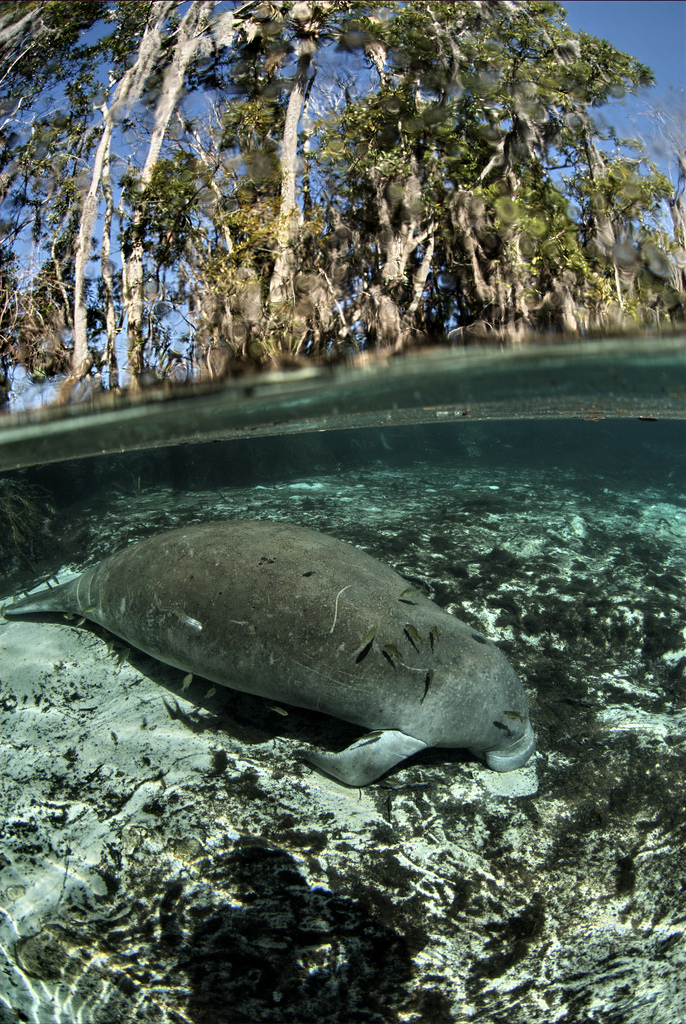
Endangered Florida manatee (Trichechus manatus)

Photo credit: David Hinkel

The Crystal River National Wildlife Refuge, was established in 1983 specifically for the protection of the endangered West Indian Manatee. This unique refuge preserves the last unspoiled and undeveloped habitat in Kings Bay, which forms the headwaters of the Crystal River. The refuge preserves the warm water spring havens, which provide critical habitat for the manatee populations that migrate here each winter.